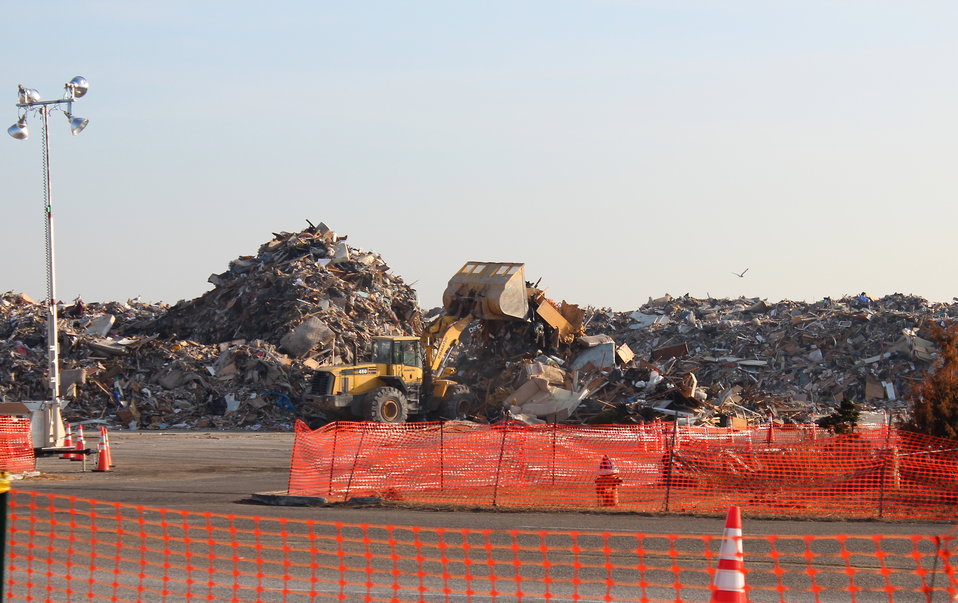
December 3, 2012 – Large debris pile near to EPA’s ‘Household Hazardous Waste’ collection PAD

The Army Corps of Engineers has also been collecting huge amounts of vegetative and structural debris following Hurricane Sandy. This photo was taken in Lido Beach at Nickerson Field in Suffolk County, NY.